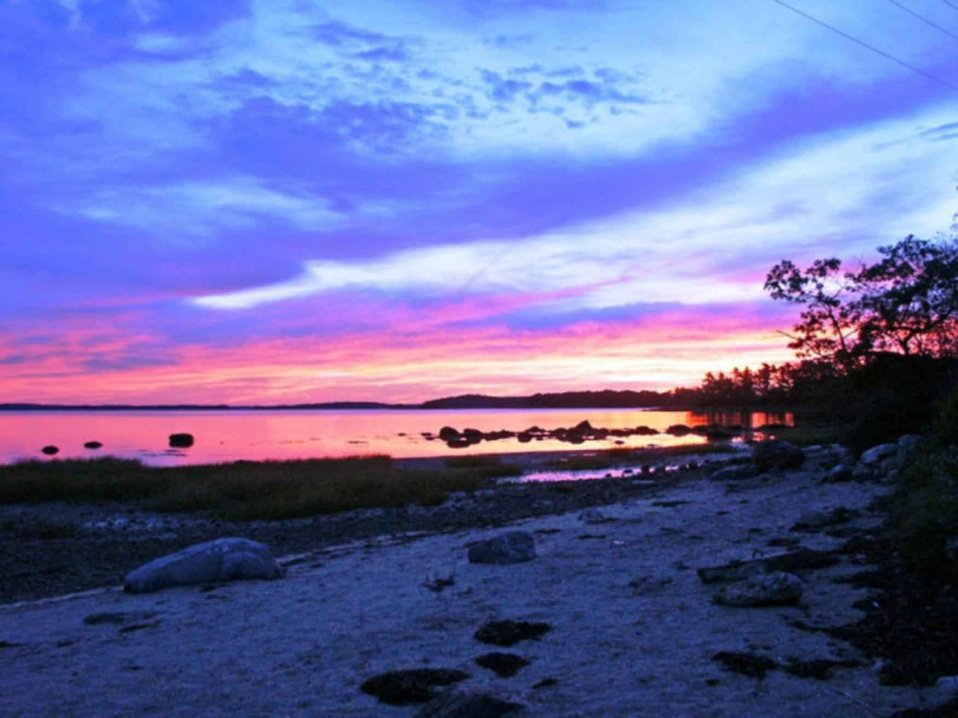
English:
Image title: A beautiful sunrise is pictured Image from Public domain images website, http://www.public-domain-image.com/full-image/nature-landscapes-public-domain-images-pictures/sunrise-public-domain-images-pictures/a-beautiful-sunrise-is-pictured.jpeg.html